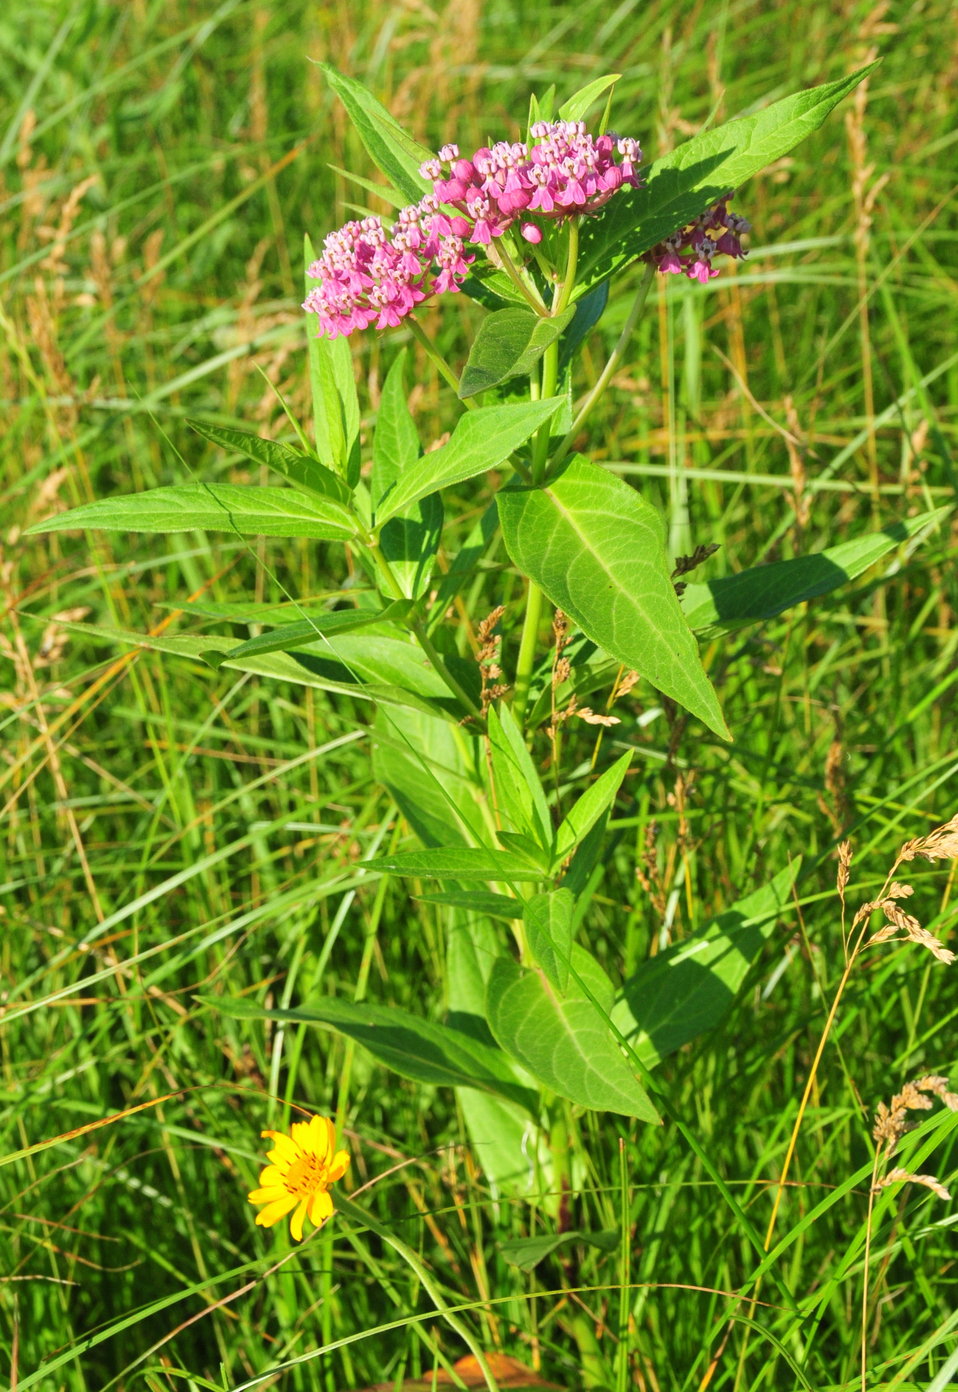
Swamp milkweed (Asclepias incarnata) Sand Lake Wetland Management District 01

Asclepias incarnata, commonly called swamp milkweed, is an erect, clump-forming, native plant found in wet meadows, along wetland margins, and in river bottomlands in the Prairie Pothole Region. It grows 3-5' tall on branching stems. Small, fragrant (smells like bubblegum, seriously the flowers smell like bubblegum), pink to mauve flowers (1/4' wide). The flowers appear in tight clusters (umbels) at the stem ends in summer. Narrow, lance-shaped, taper-pointed leaves are 3-6' long. Stems exude a toxic white milky latex like sap when cut. Flowers are followed by attractive seed pods (to 4' long) which split open when ripe releasing silky-haired seeds easily carried by the wind. Flowers are very attractive to butterflies as a nectar source. In addition, swamp milkweed is an important food source for the larval stage of Monarch butterflies.